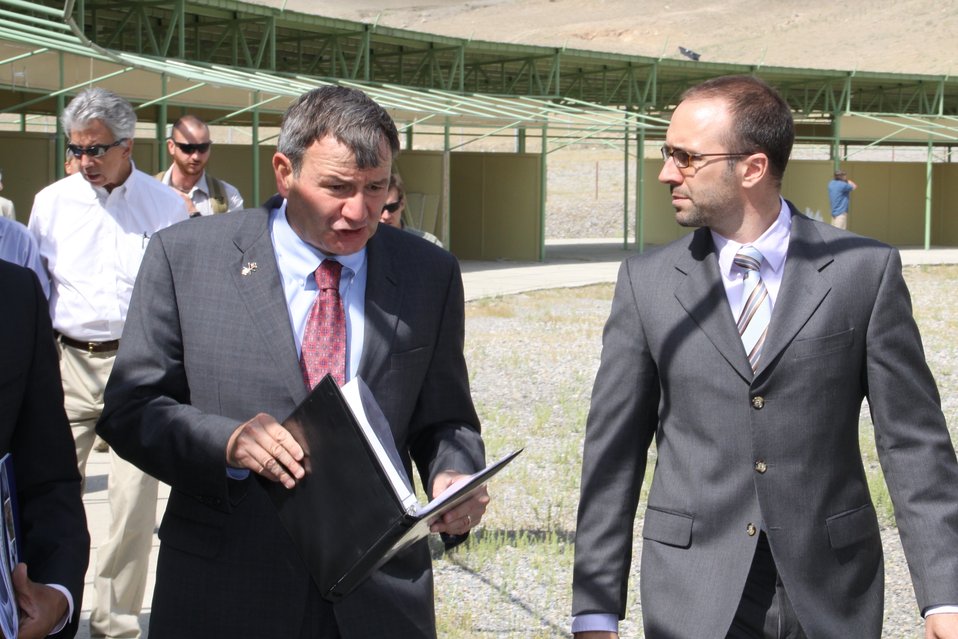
Badam Bagh Farm